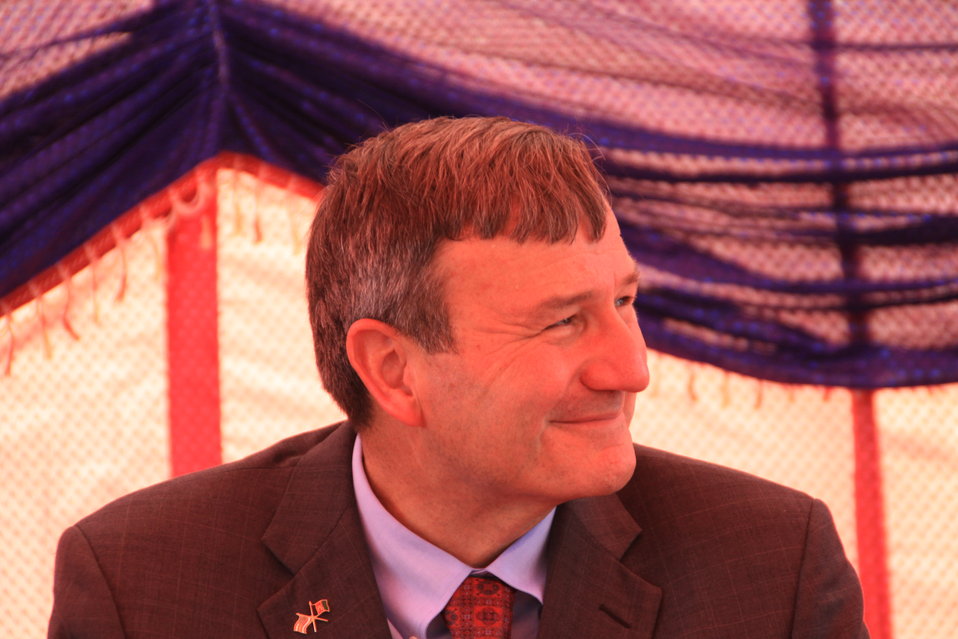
Badam Bagh Farm